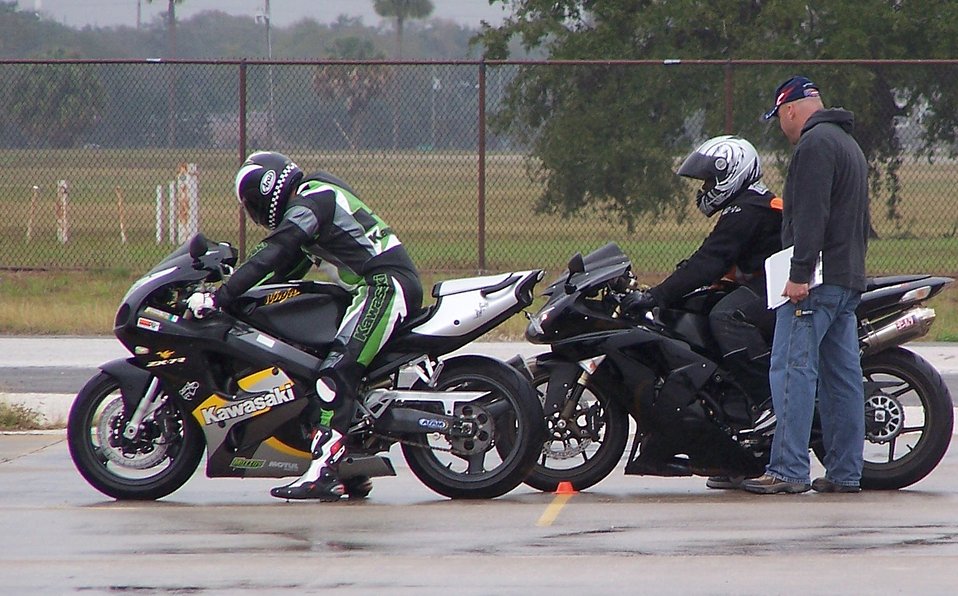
MacDill riders star in motorcycle safety DVD

Airmen ride their motocycles while a video crew shoot footage for a new motorcycle safety DVD Jan. 24 at MacDill Air Force Base, Fla. The video will be a part of a safety DVD used by the military and is set to release in the spring.